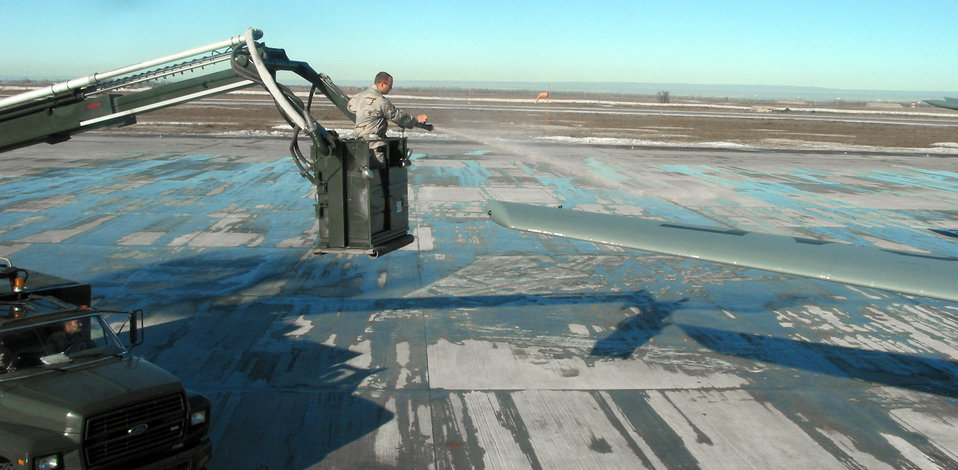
Manas' transients

MANAS AIR BASE, Kyrgyzstan -- Staff Sgt. Christopher Smith de-ices an aircraft on the flightline here. He is assigned to the 376th Air Expeditionary Wing's transient alert team.